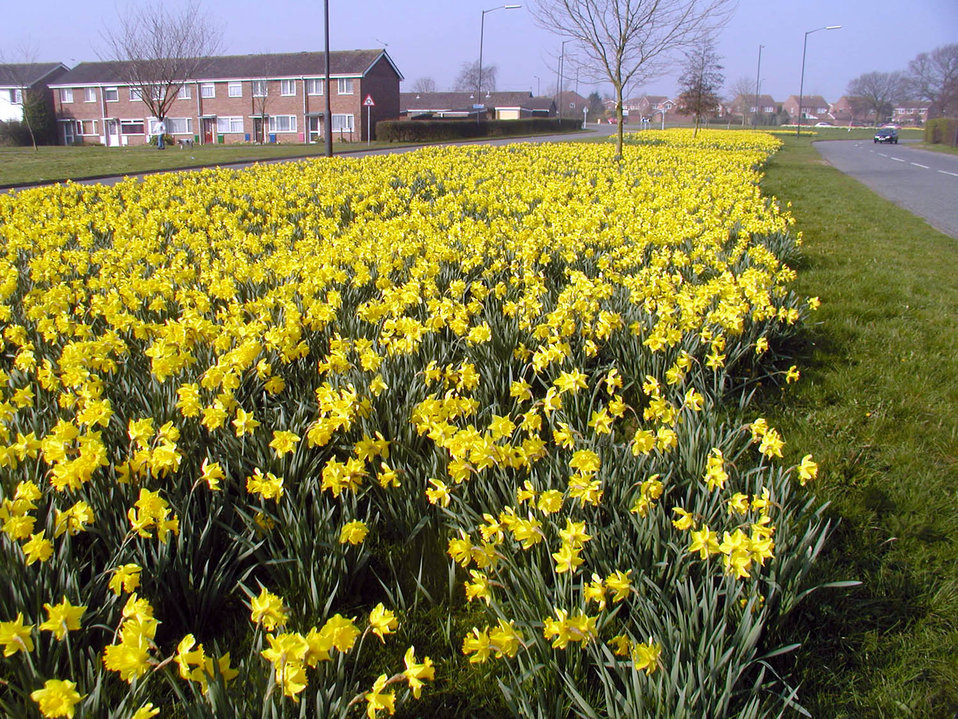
Yate.daffodils.arp